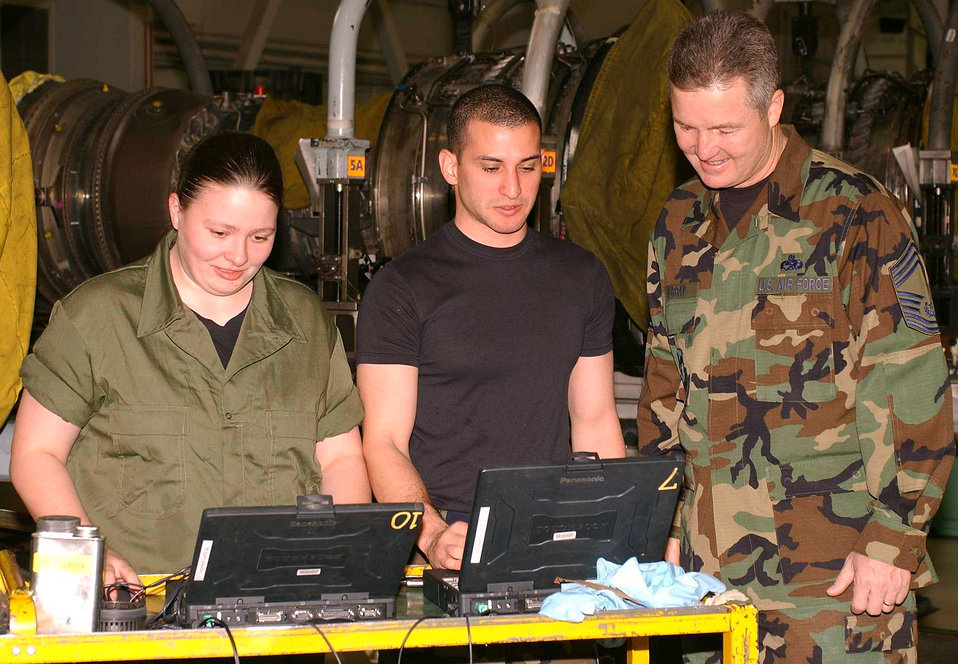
CMSAF visits Edwards, commends achievements

EDWARDS AIR FORCE BASE, Calif. (AFPN) -- Chief Master Sgt. of the Air Force Gerald Murray (right) looks at computer screens with Airman 1st Class Laura Lane (left) and Senior Airman Marland Fox. Lane and Fox are both jet-engine mechanics with the 412th Maintenance Squadron's propulsion flight at Edwards Air Force Base, Calif.